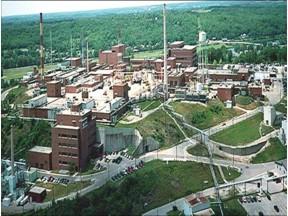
Mound Site

An aerial photo of the Miamisburg Site located in Ohio before cleanup activities had begun.